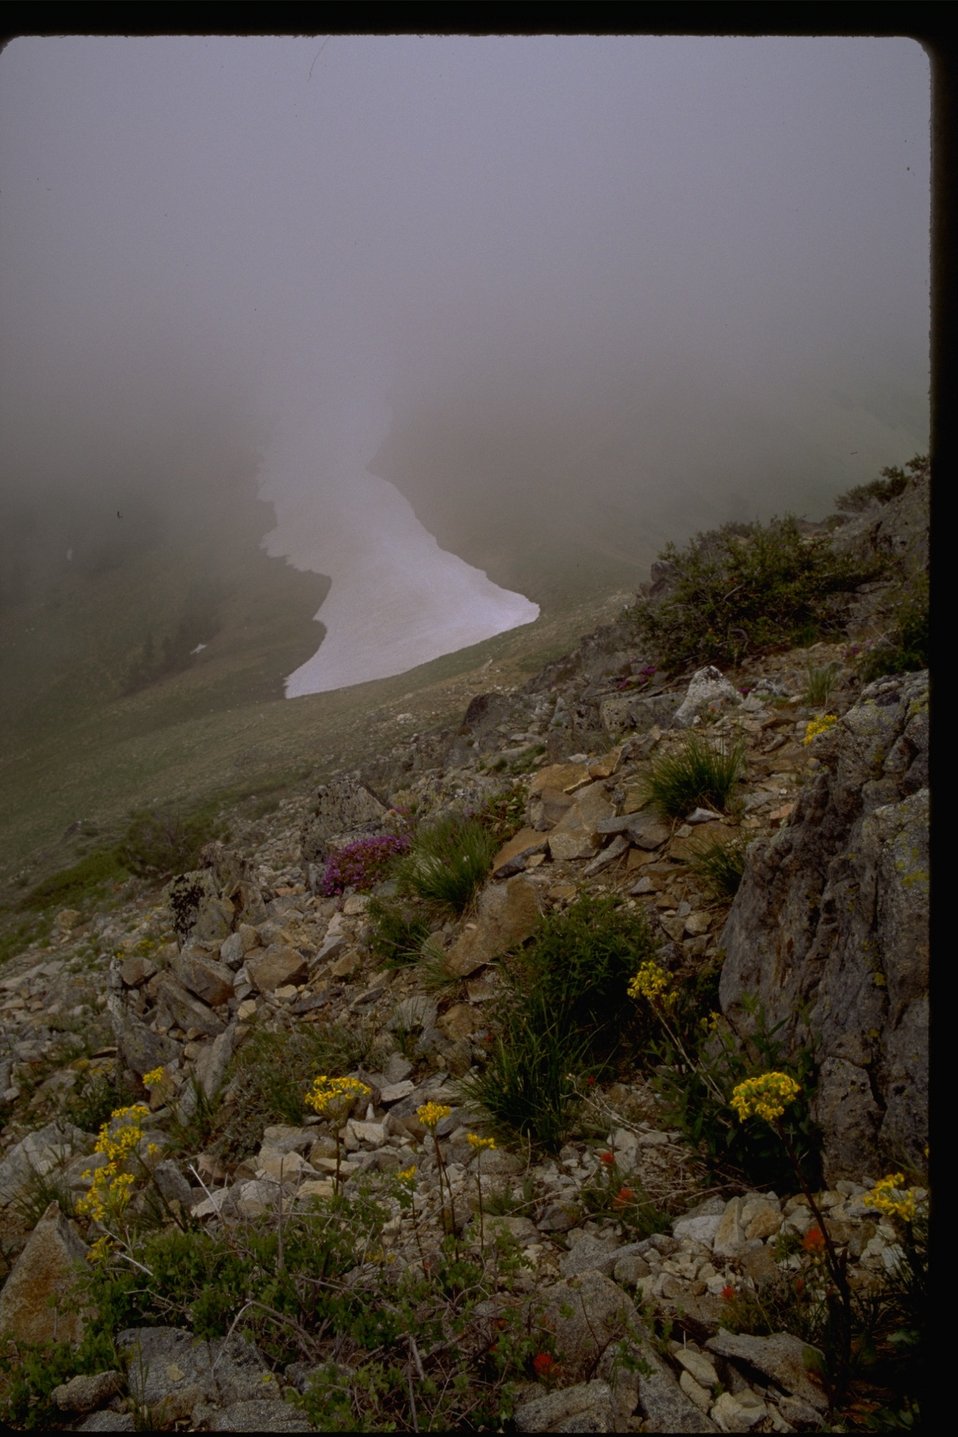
Flowers on a foggy day at Dutchman Peak.